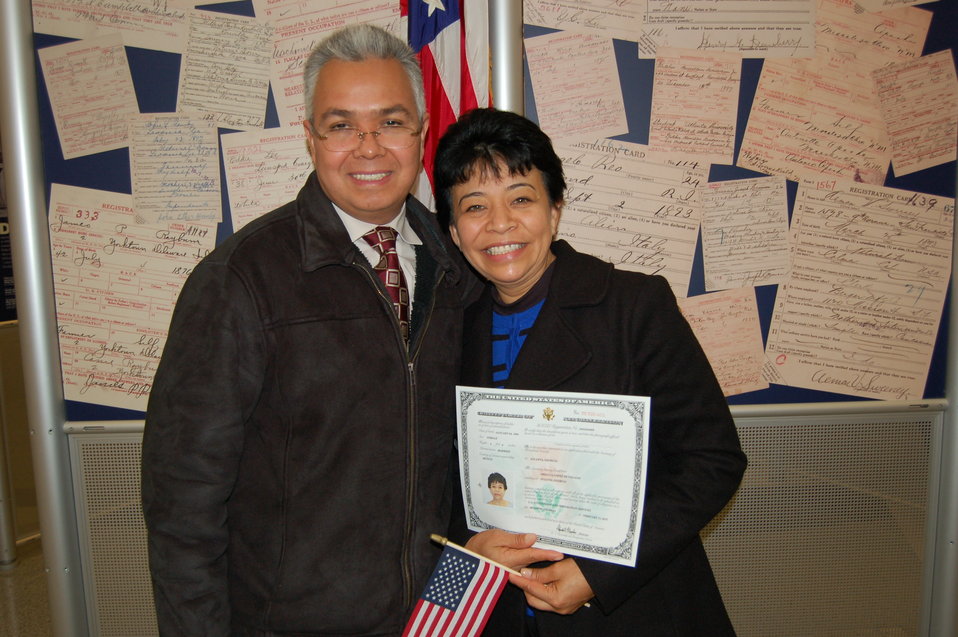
New Citizens